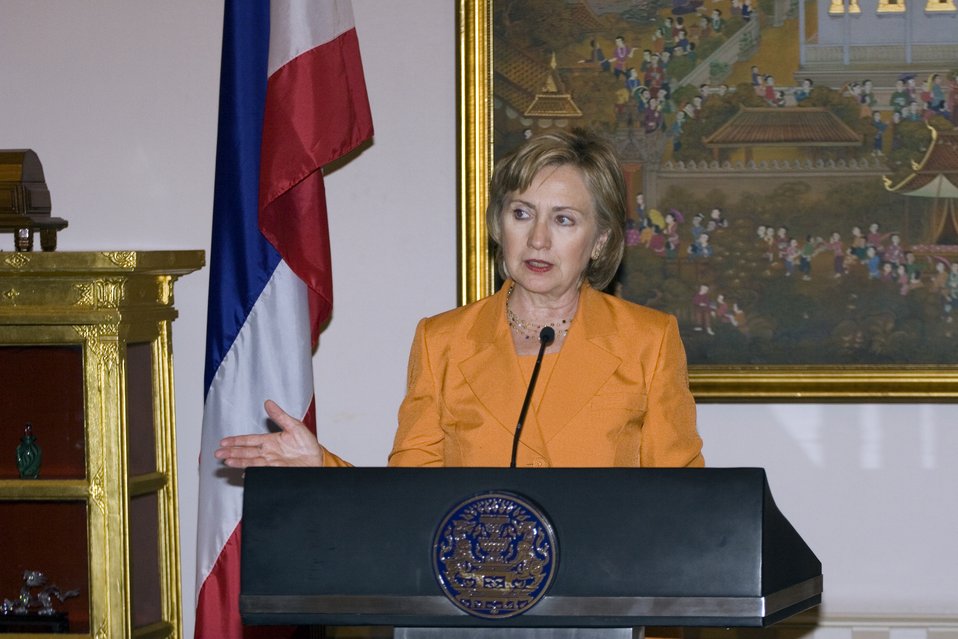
U.S.-Thailand Bilateral Meeting

U.S. Secretary of State Hillary Rodham Clintonanswers questions from the press following the bilateral meeting at Government House in Bangkok, Thailand July 21, 2009.